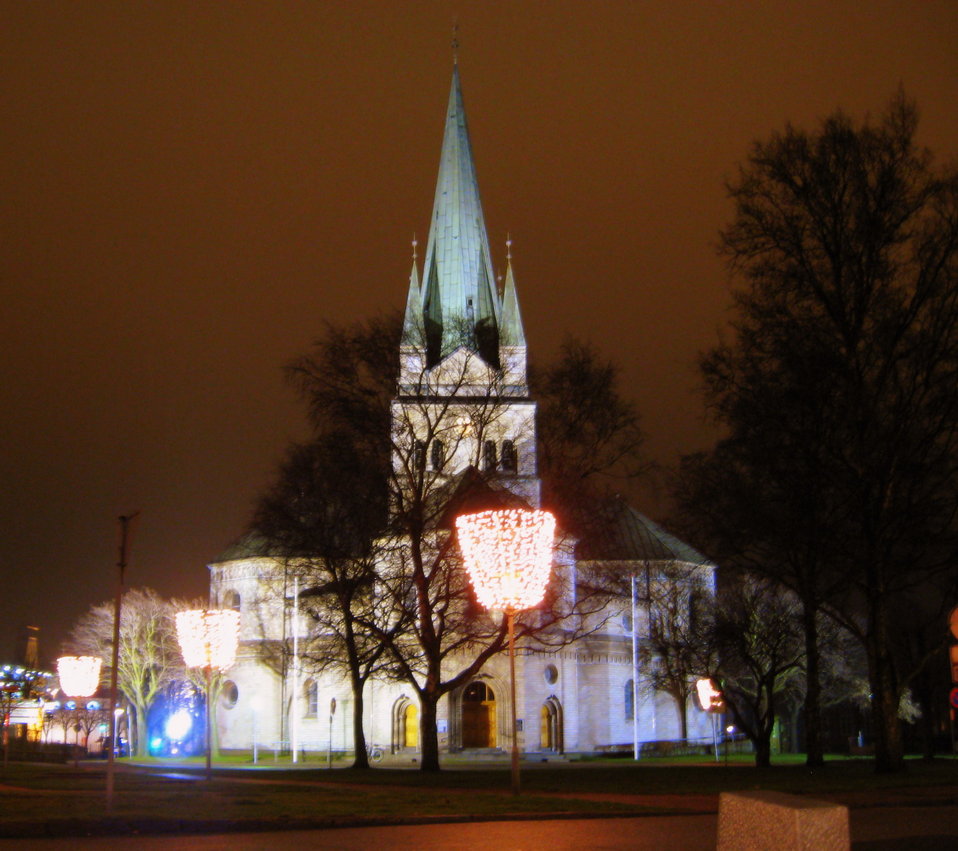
Dansk: Frederikshavn Kirke om natten